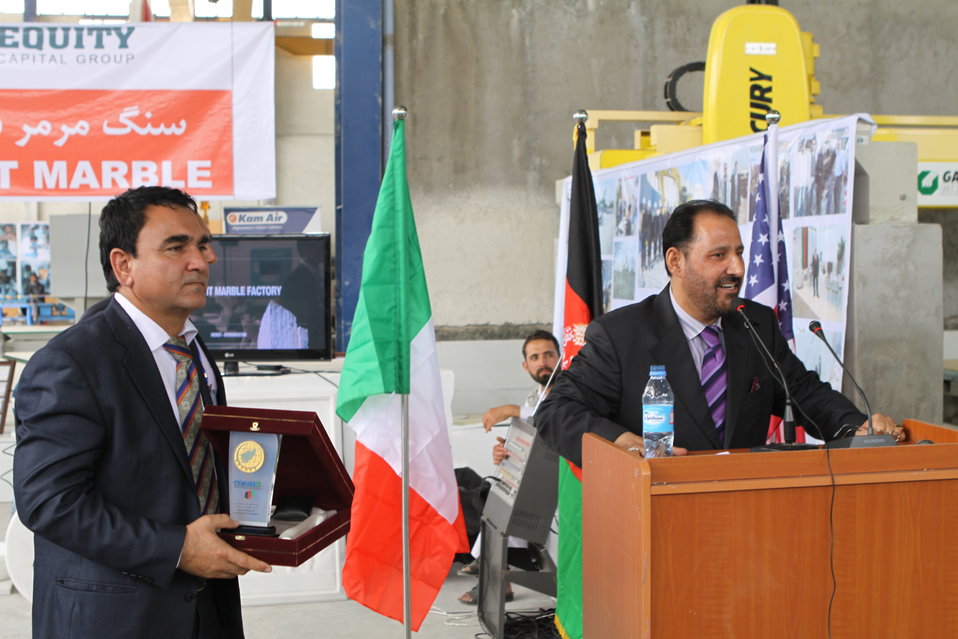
100525 Hirat Marble Conference 469